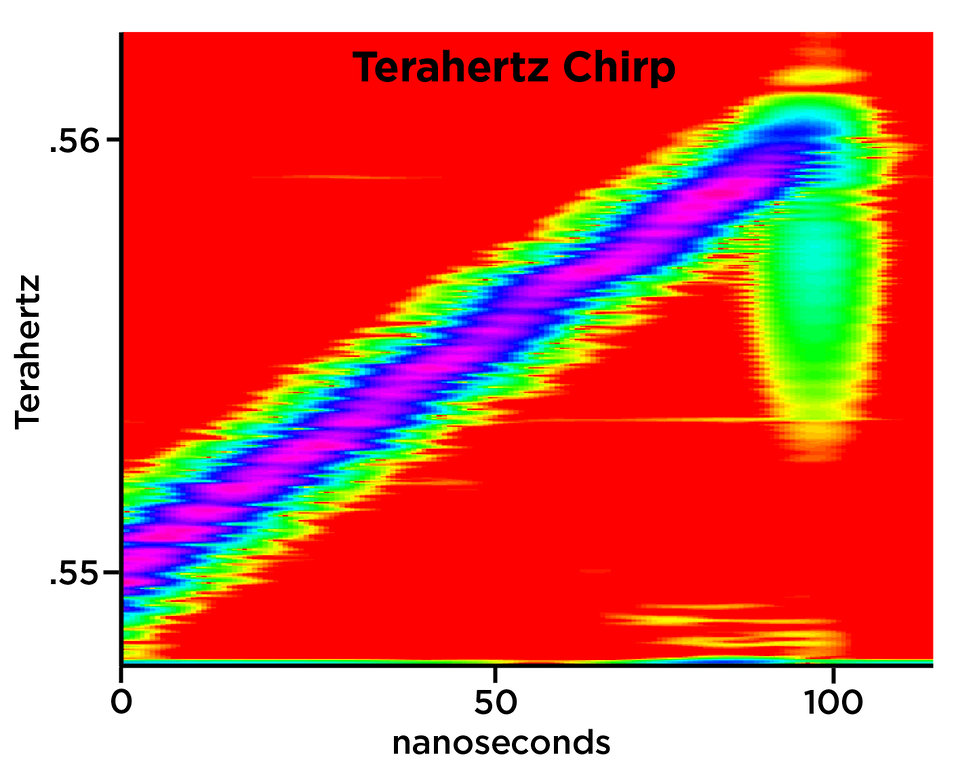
Gas Detector

Graph shows the NIST detectors linear increase in frequency as a function of time, sweeping from 1-12 Gigahertz in frequency over 100 nanoseconds. Click on the image to see an animation of the process, slowed to 5 seconds and using an audio chirp as an analogy to the terahertz chirp.